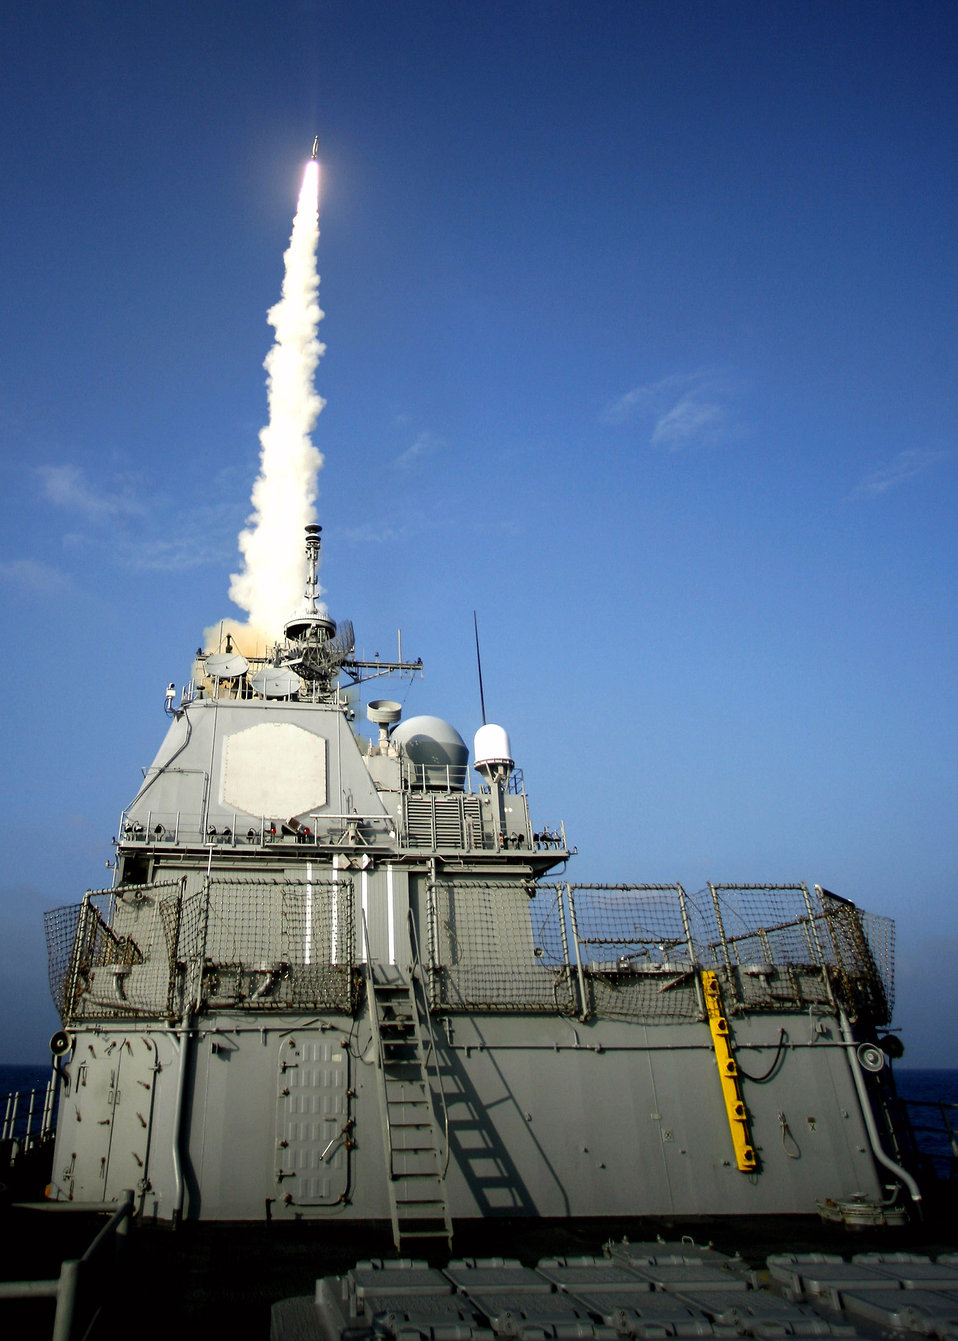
AEDC-tested Navy Standard Missile destroys errant satellite

The USS Lake Erie launches a Navy Standard Missile-3 Feb. 20 at a nonfunctioning National Reconnaissance Office satellite as it traveled in space at more than 17,000 mph.